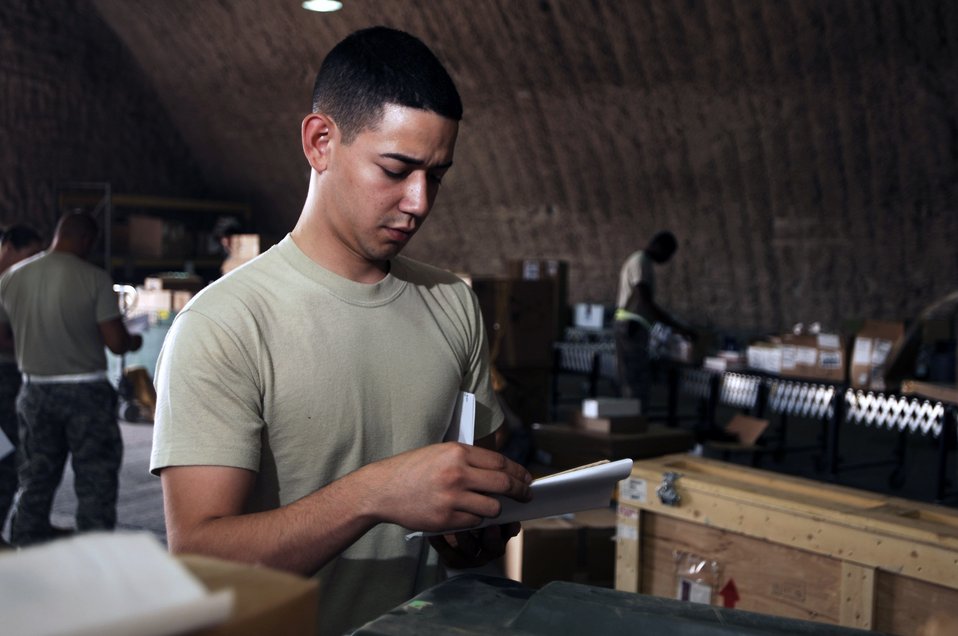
Joint Base Balad Airmen's initiatives shorten supply lines

Airman 1st Class Carlos Fuentes validates documentation on parts due in for maintenance Aug. 5 at Joint Base Balad, Iraq. The 332nd Expeditionary Logistics Readiness Squadron's Receiving Flight Service Center Airmen process approximately 350 aircraft parts a week, including broken parts and replacements. Airman Fuentes, a flight service center journeyman assigned to the 332nd ELRS, is deployed from Davis-Monthan Air Force Base, Ariz. His hometown is Houston.